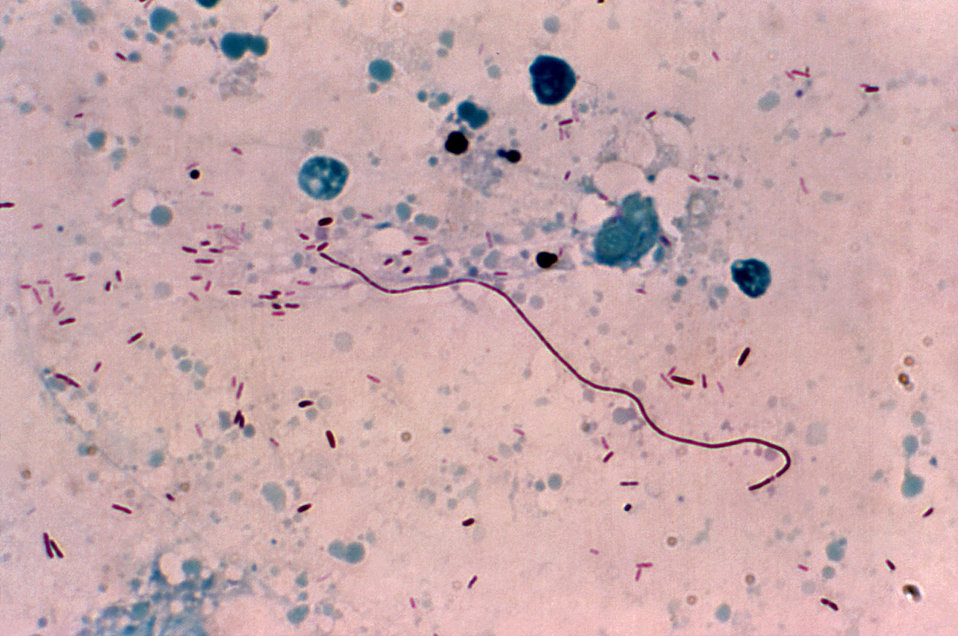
This light photomicrograph depicted numbers of Gram-negative Legionella pneumophila bacteria that had been incubated in a yolk sac within an embyonated egg, and subsequently, stained using the Gimenez method. These organisms are responsible for causing the disease known as 'Legionnaires'' disease.Legionellosis disease has two distinct forms:-Legionnaires' disease,